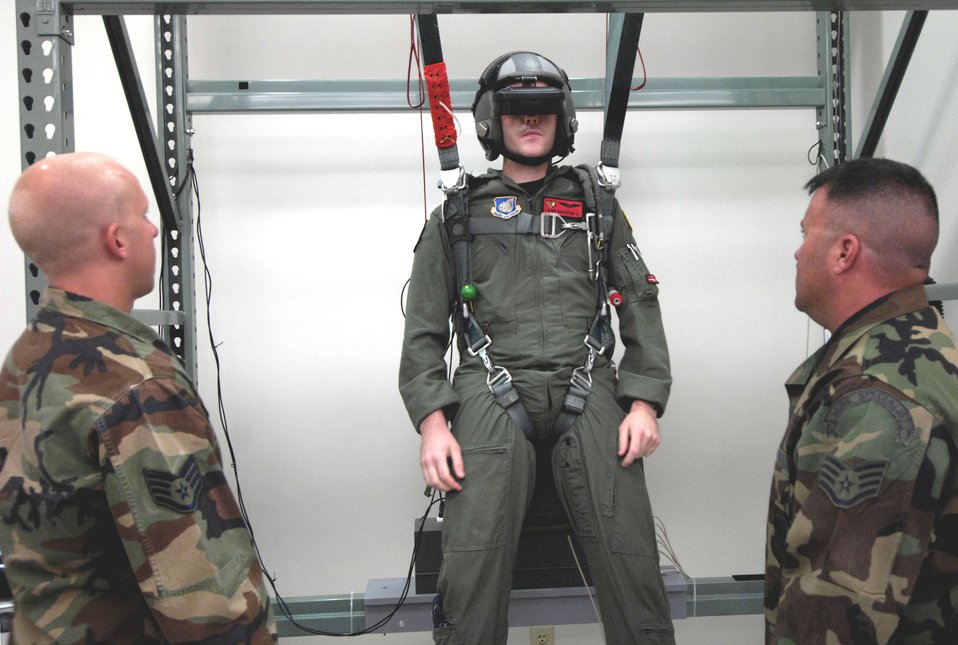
Virtual technology enhances training for aircrews

Staff Sgts. Matt Magnussen and Christopher Ferguson check with 1st Lt. John Brantuk II to make sure the virtual simulator is working before starting parachute training at Hickam Air Force Base, Hawaii, on Oct. 4. Sergeant Magnussen is a life support instructor and Sergeant Ferguson is a survival, evasion, resistance and escape instructor with the 15th Operations Support Squadron. Lieutenant Brantuk is a pilot with the 535th Airlift Squadron.